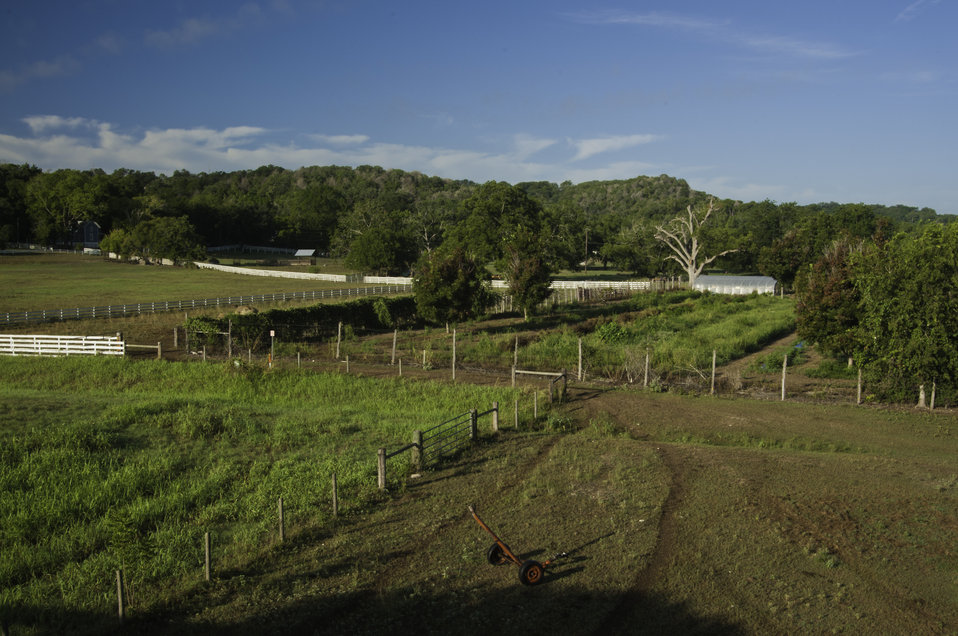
The sun shines down on a Texas farm on Aug. 23, 2013.